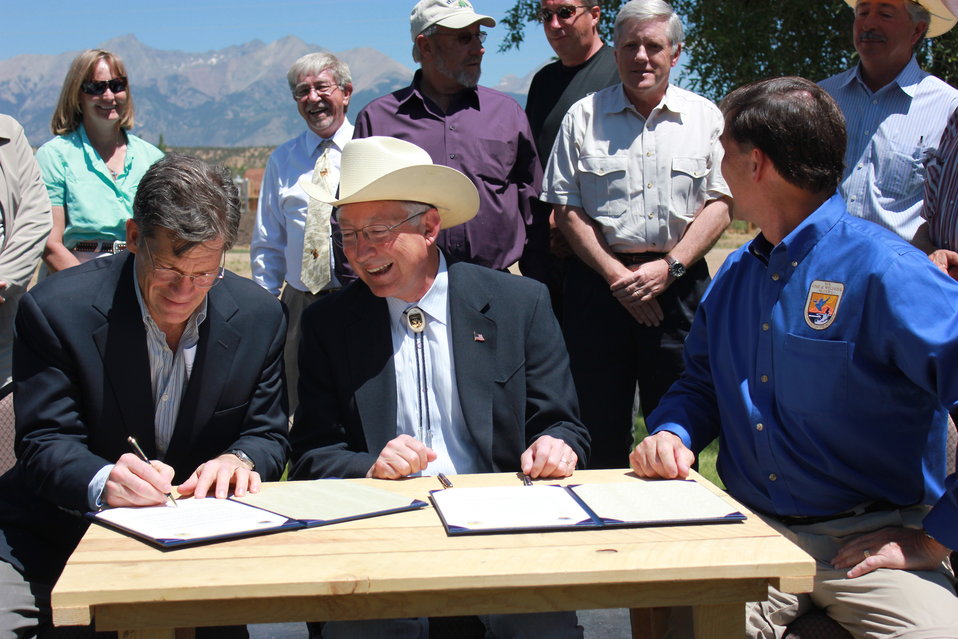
Historic Conservation Easement in Sangre de Cristo Mountains